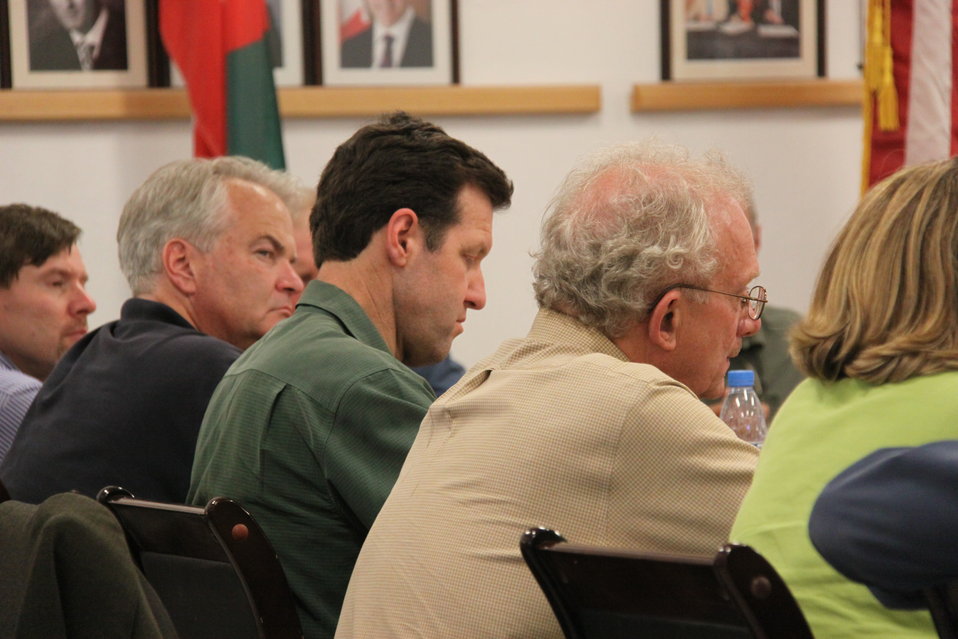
Meeting with Local Leaders in Kandahar